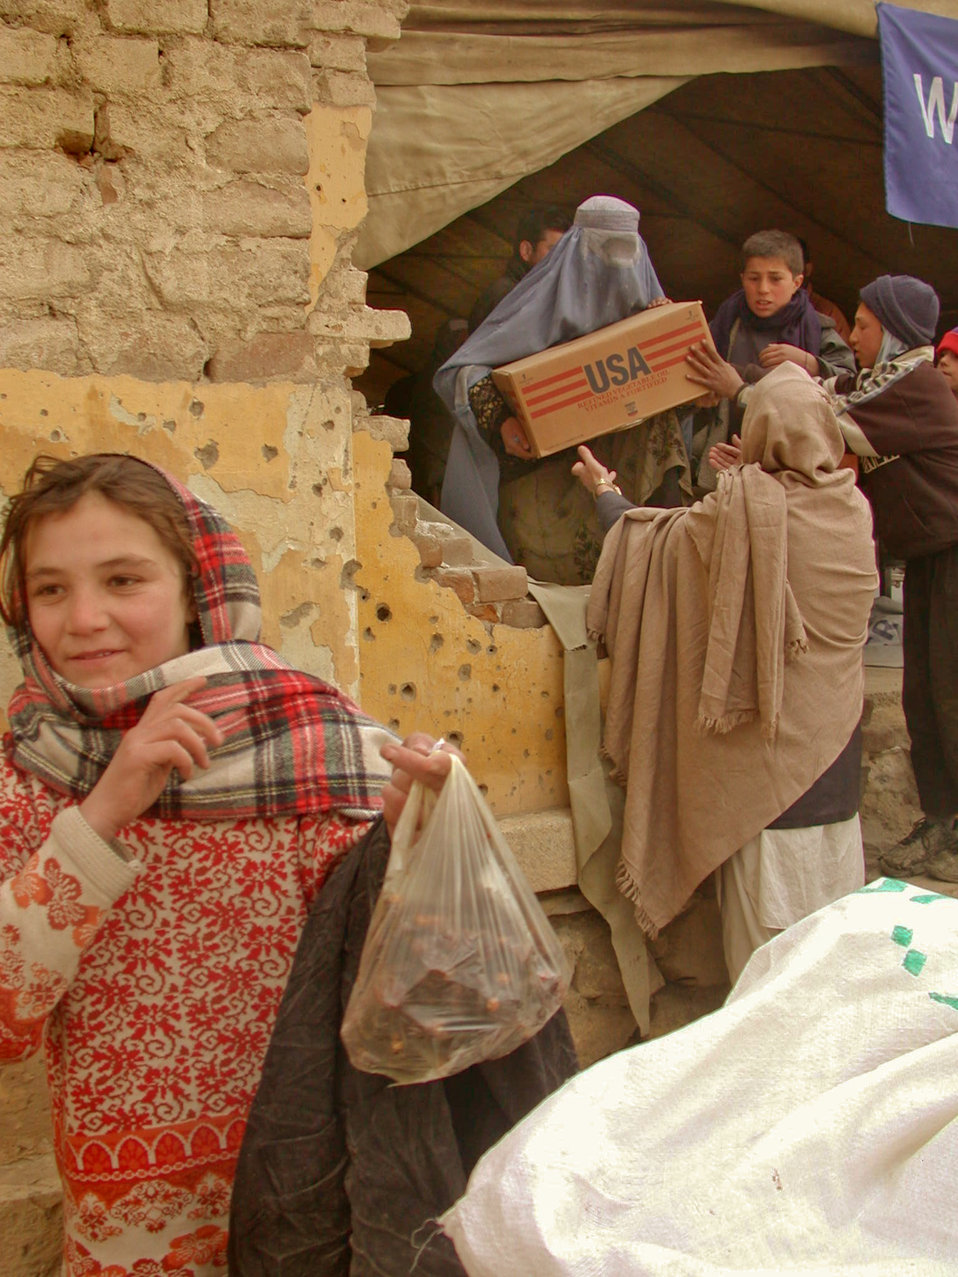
Food Distribution

USAID is the largest donor to the World Food Program (WFP) in Afghanistan, supporting conflict and disaster-affected communities, internally displaced people, and other vulnerable groups (including malnourished children and pregnant women) whose food security has been adversely affected by shocks. Since 2010, USAID/Afghanistan has provided WFP with US$293.8 million in cash and food assistance.